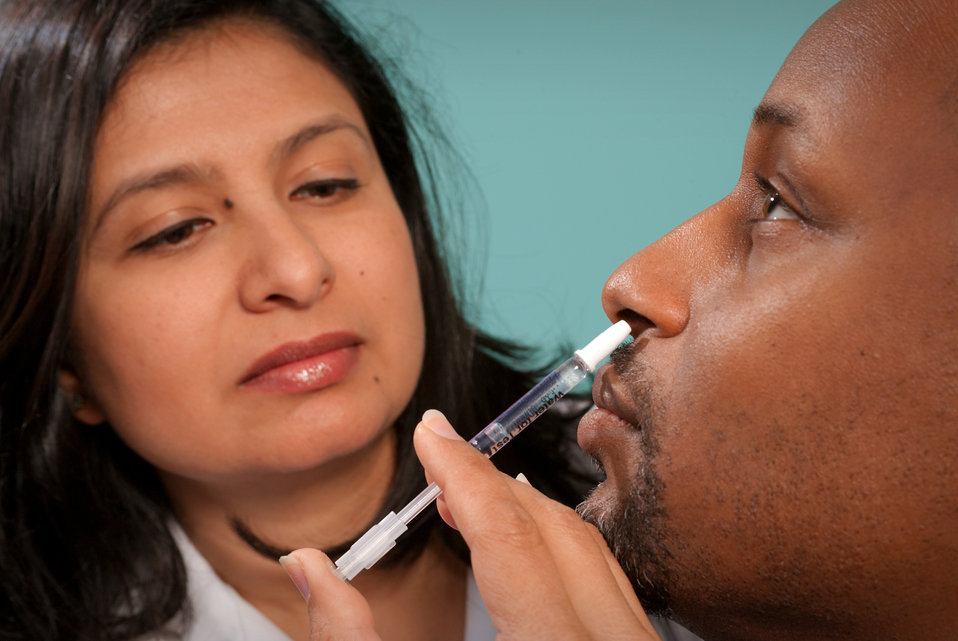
This 2009 image depicts a healthcare practitioner as she was administering the H1N1 live attenuated intranasal vaccine (LAIV) to an African-American man. Using a small syringe, she was delivering the vaccine mist into the man's left nostril.